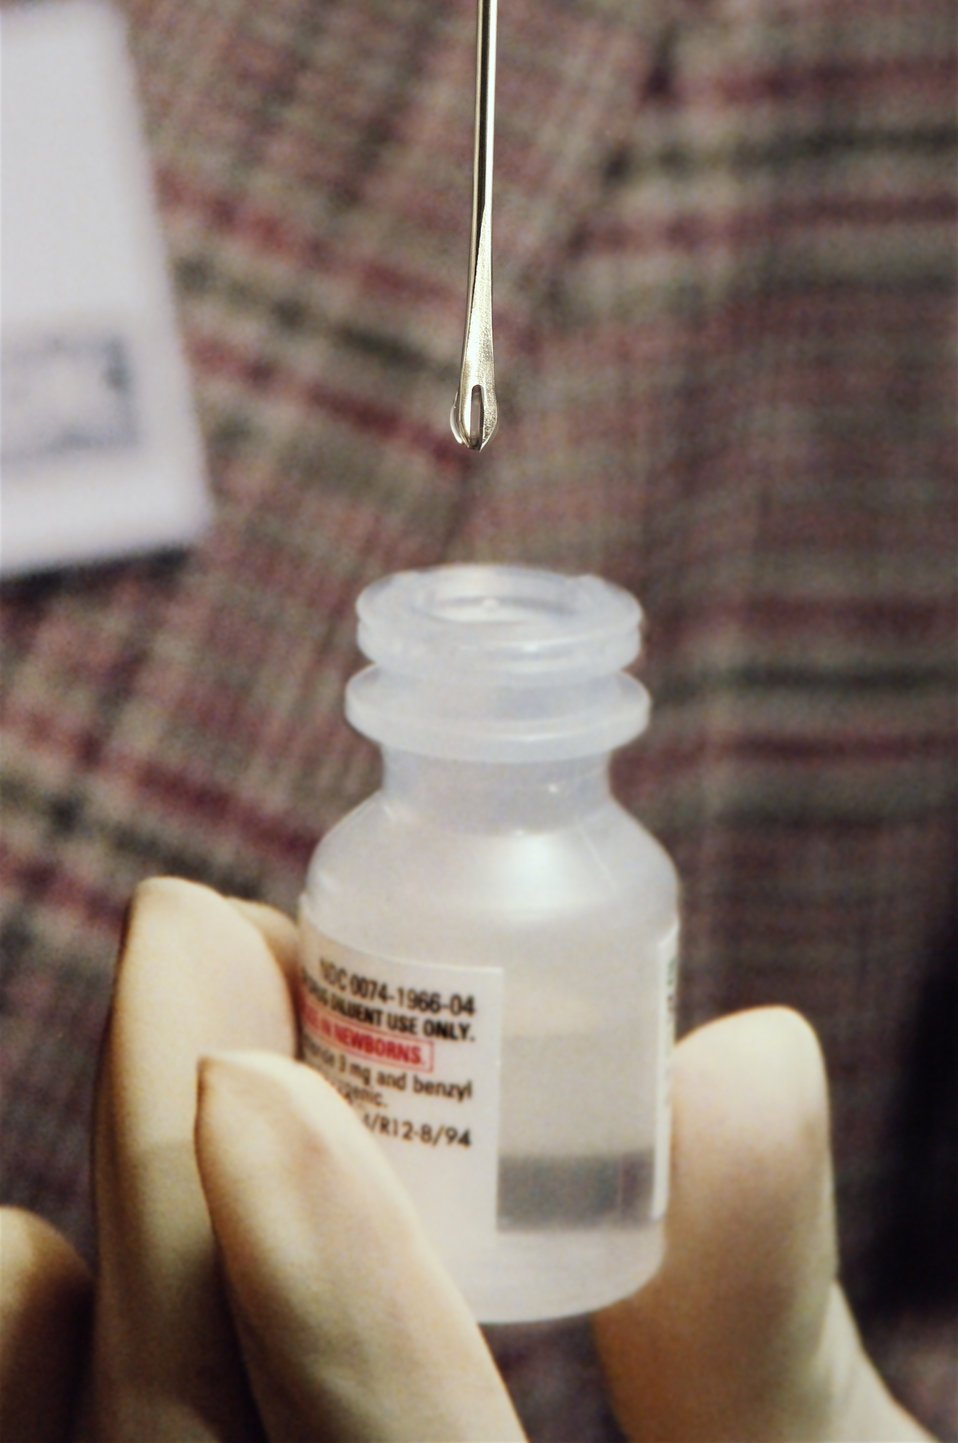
CDC Clinician shows bifurcated needle with saline solution used in smallpox vaccination during the 2002 Vaccinator Workshop.